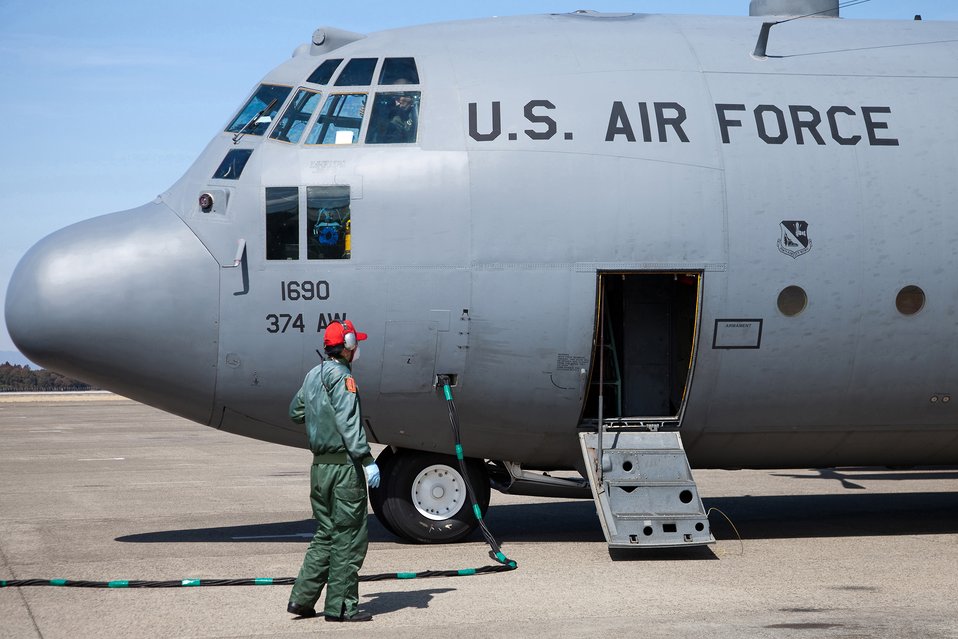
Airmen deliver boron

A Japan Air Self-Defense Force member provides power for a C-130 Hercules after unloading seven boron pallets March 19, 2011, at Hyakuri Air Base, Japan.